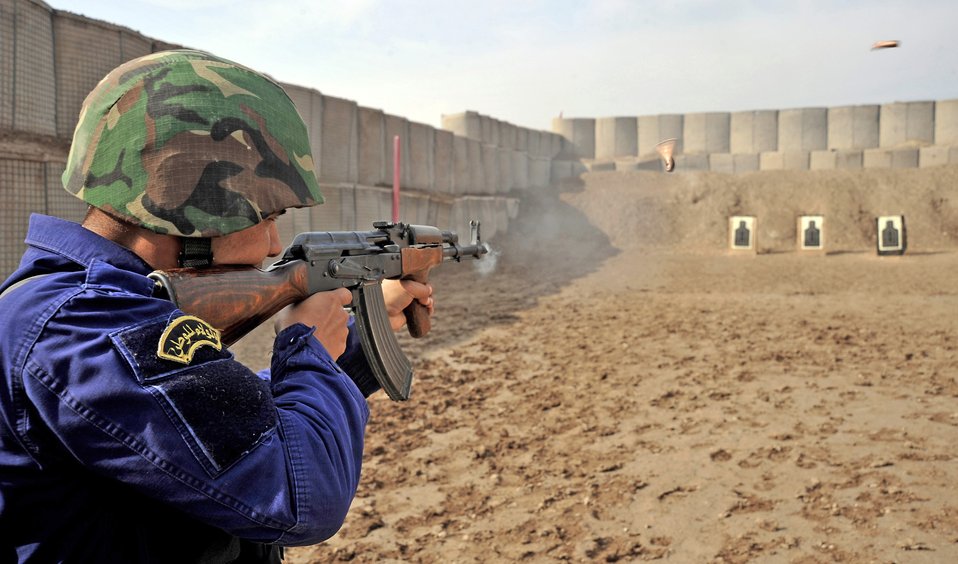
Aim for the center

An Iraqi police officer shoots downrange at his target after receiving instructions from his U.S. Air Force instructor Nov. 21, 2009, in Baghdad, Iraq.